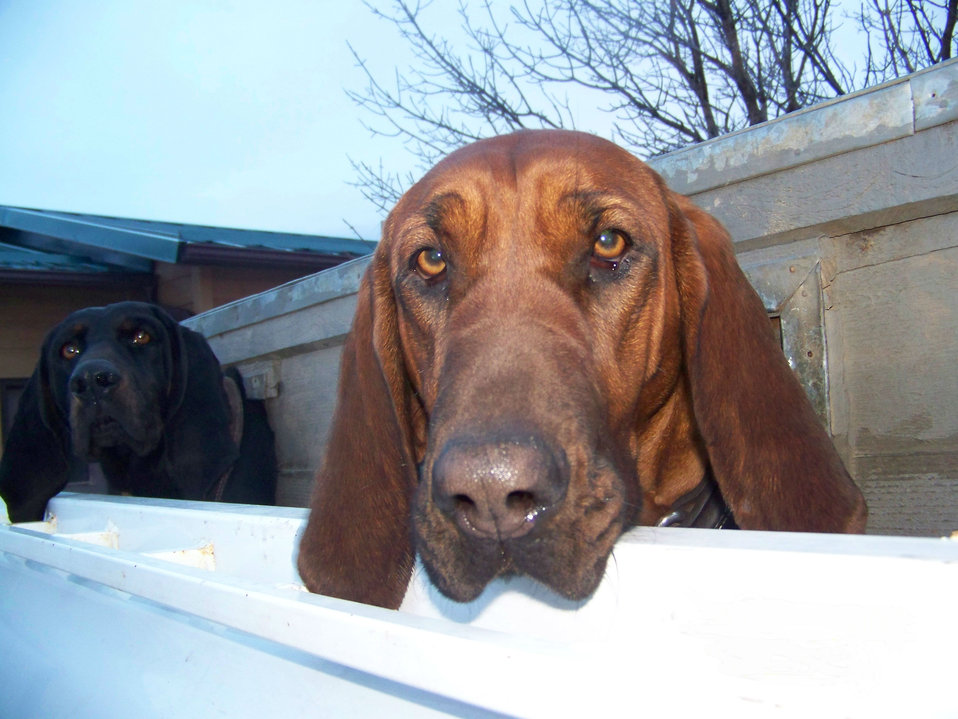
Lion Dogs

The hounds waiting patiently in the dog box for us to find a fresh mountain lion track for them! Lilly, a redbone hound, helps track mountain lions for an ongoing study on CMR National Wildlife Refuge.